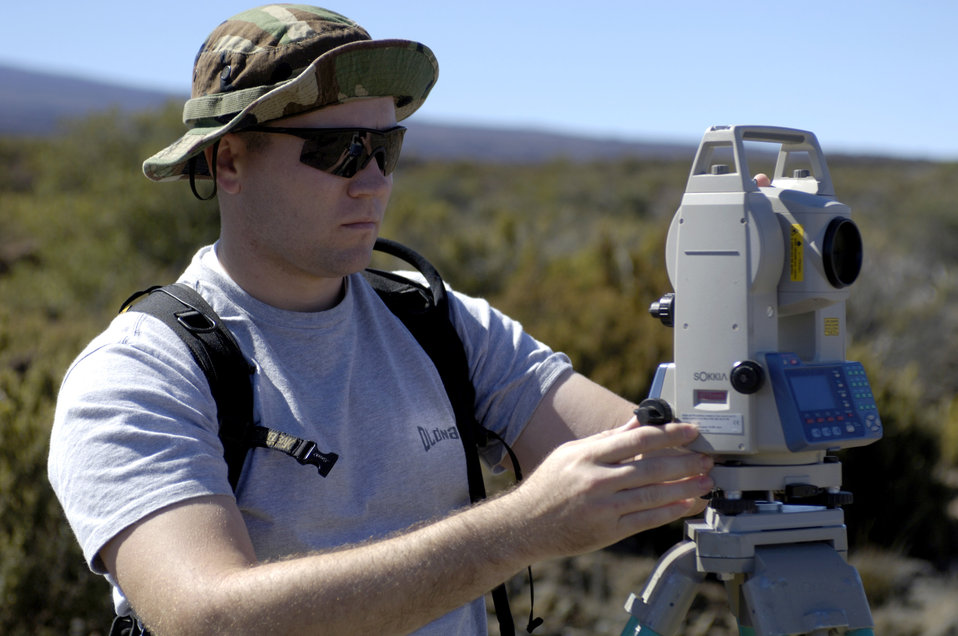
Air Force attends FBI training

POHAKULOA TRAINING AREA, Hawaii (AFPN) -- Airman 1st Class Kent Perkins maps the location of evidence at a bomb scene scenario. The FBI, along with Army cadre, conducted a large vehicle post blast investigator's course here. It included instruction on investigative techniques and evidence collection. Airman Perkins is assigned to the 15th Civil Engineer Squadron explosive ordnance disposal flight at Hickam Air Force Base, Hawaii.